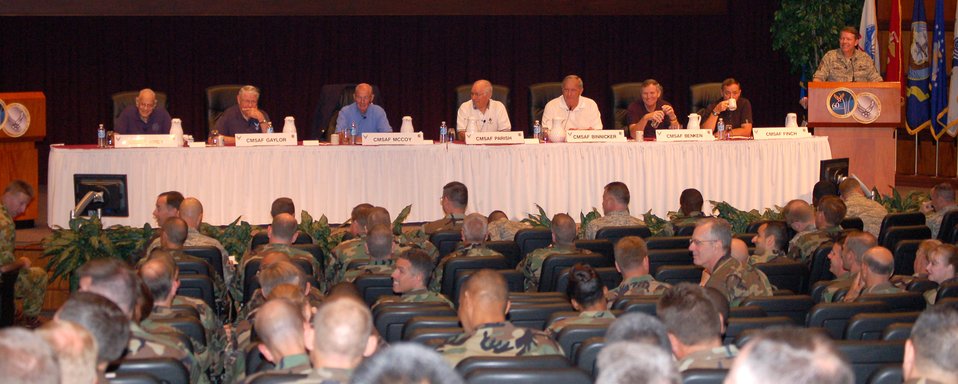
Enlisted leaders gain from summit outcome

Seven former chief master sergeants of the Air Force and current Chief Master Sgt. of the Air Force Rodney J. McKinley discuss issues affecting senior enlisted leaders July 26 during the Senior Enlisted Leader Summit held at the Air Force Senior NCO Academy at Maxwell Air Force Base's Gunter Annex, Ala.